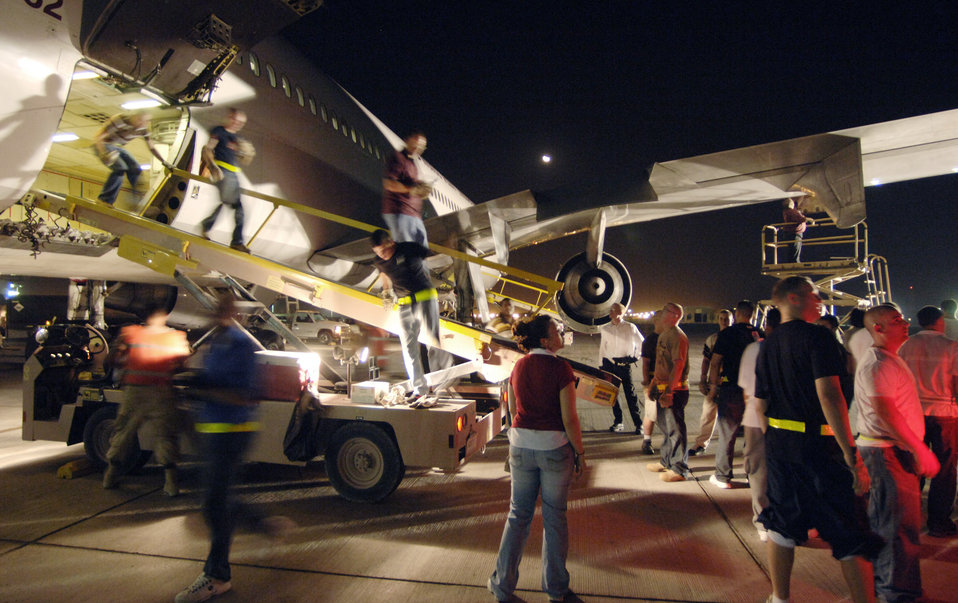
Work begins when boots hit the ground

Minutes after landing in Southwest Asia following a 24-plus hour flight, a volunteer detail of 30 volunteers assists ground crews in removing luggage from the cargo hull of a commercial DC-10 airliner Sept. 17.